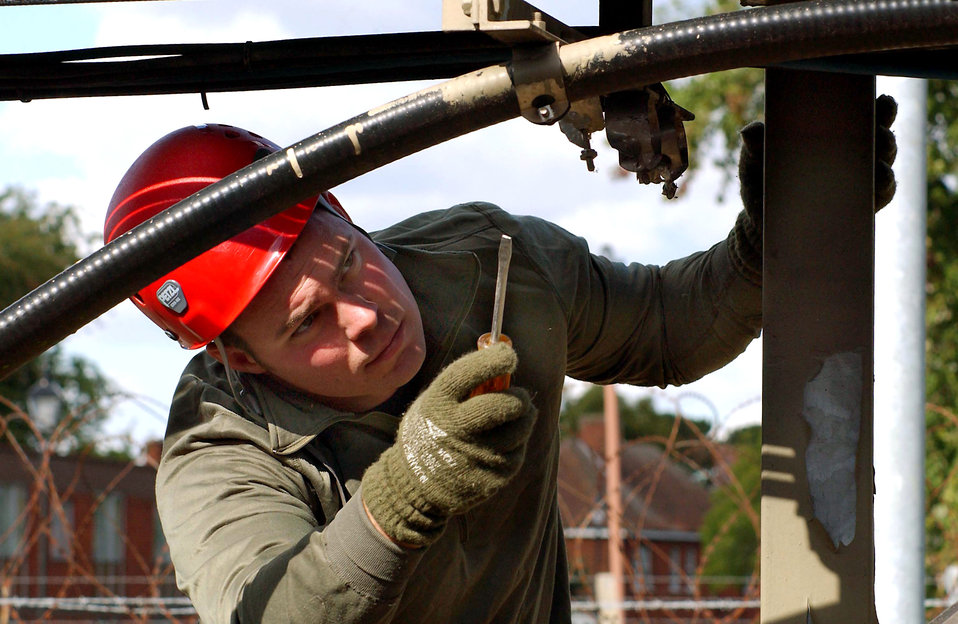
Digital European Backbone decommissioning

ROYAL AIR FORCE MILDENHALL, England -- Staff Sgt. Brandon DeMotts removes a wave guide as part of the Digital European Backbone's decommissioning. This backbone consisted of 17 sites in England and others throughout Europe forming a network of radio sites. A new system, using government-owned and -leased fiber-optic cabling technology, will allow voice, video and data transfer at higher rates. DeMotts is assigned to the 1st Communications Maintenance Squadron at Kapaun Air Station, Germany.